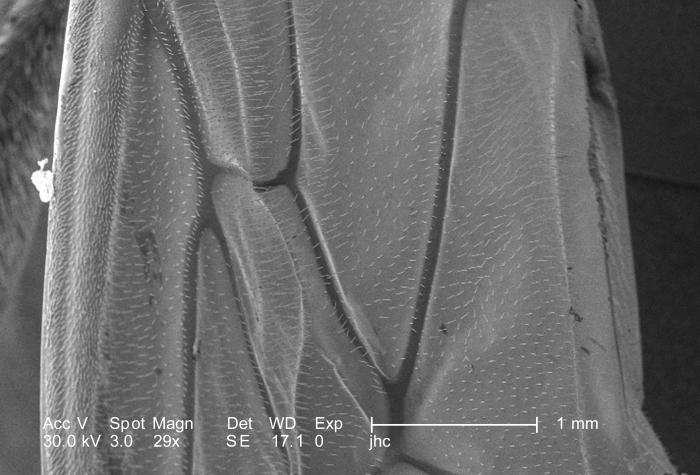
Under a low magnification of only 29X, this scanning electron micrograph (SEM) depicted some of the surface details found on one of the four wings on this unidentified hornet discovered in the suburbs of Decatur, Georgia. In this particular view, you'll note that the wing's surface is coated with what appears to be numerous 'hairs', which are known as 'setae'. These setae are not keratin-based mammalian hairs, but are composed of chitin, as is its exoskeleton.